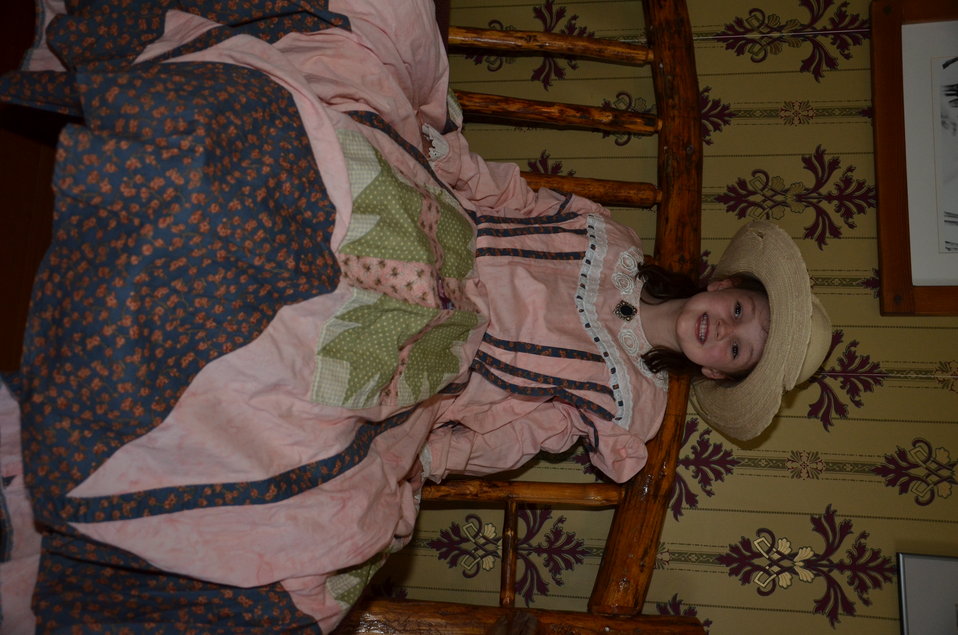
Who Doesn't Love to Dress Up?

Period costumes, on loan from the Jackson Hole Playhouse, were on display at the Historic Miller House during the National Elk Refuge's centennial weekend. Visitors to the site could try on the costumes for a fun dress-up photo opportunity.

Credit: USFWS / Bobby Harkey, National Elk Refuge volunteer